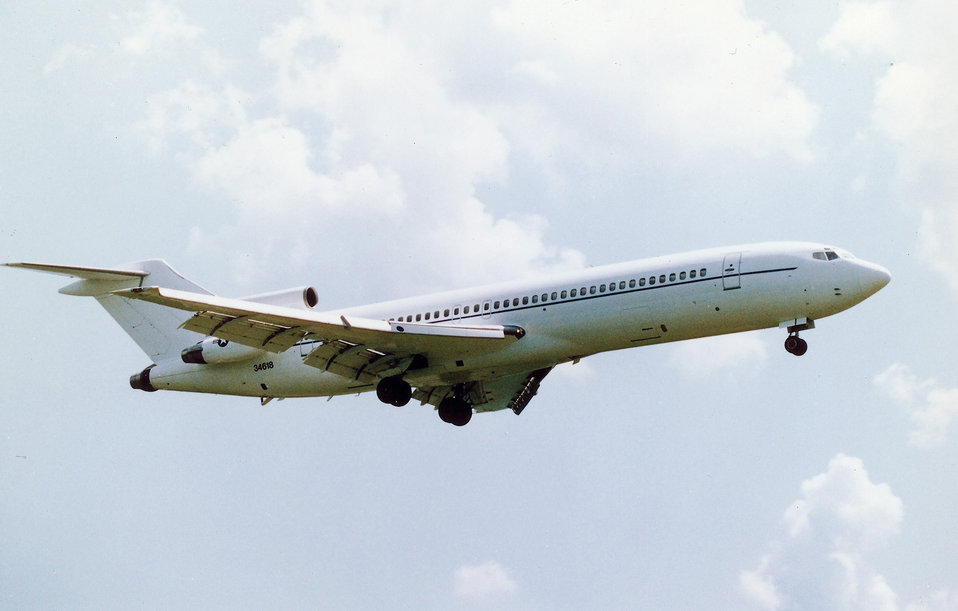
C-22B

FILE PHOTO -- The C-22B, a Boeing 727-100, is the primary medium-range aircraft used by the Air National Guard and National Guard Bureau to airlift personnel. The C-22B's unique arrangement of leading-edge devices and trailing-edge flaps permit lower approach speeds, thus allowing operation from runways never intended for a 600-mph (Mach 0.82) aircraft. The aircraft has heated and pressurized baggage compartments - one on the right side forward and the second just aft of the wheel well. The two compartments provide 425 cubic feet (12.75 cubic meters) of cargo space. The fuselage also incorporates a forward entry door and hydraulically opened integral aft stairs in the tail cone.